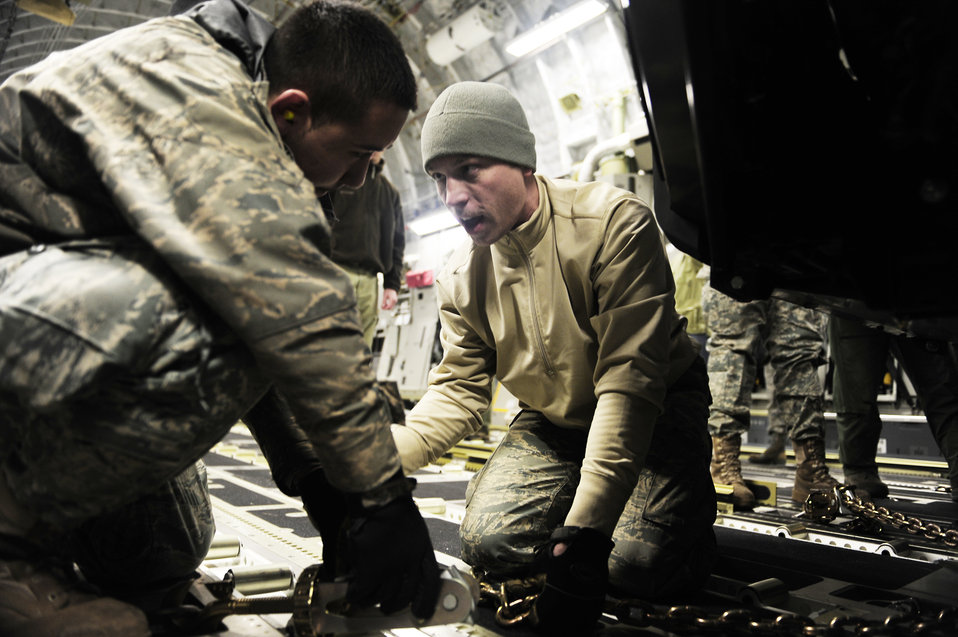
Haiti Relief Operations

Airmen load cargo onto a C-17 Globemaster III Jan. 14, 2010 at Joint Base McGuire-Dix-Lakehurst, N.J., supporting relief efforts to Haiti. The Airmen are assigned to the 621st Contingency Response Wing at JB McGuire.